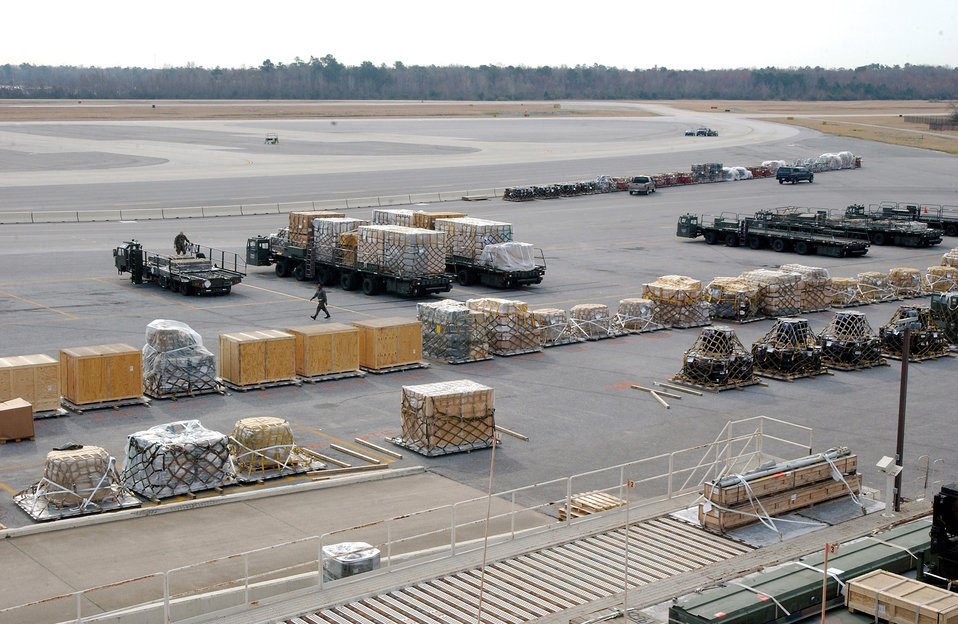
'Blizzard' of cargo crashes on Charleston

CHARLESTON AIR FORCE BASE, S.C. -- Pallets line the flightline at Charleston Air Force Base, S.C. The workload at the base's 437th Aerial Port Squadron increased an estimated 250 percent after two APS buildings at Dover Air Force Base, Del., collapsed under snow from a blizzard.